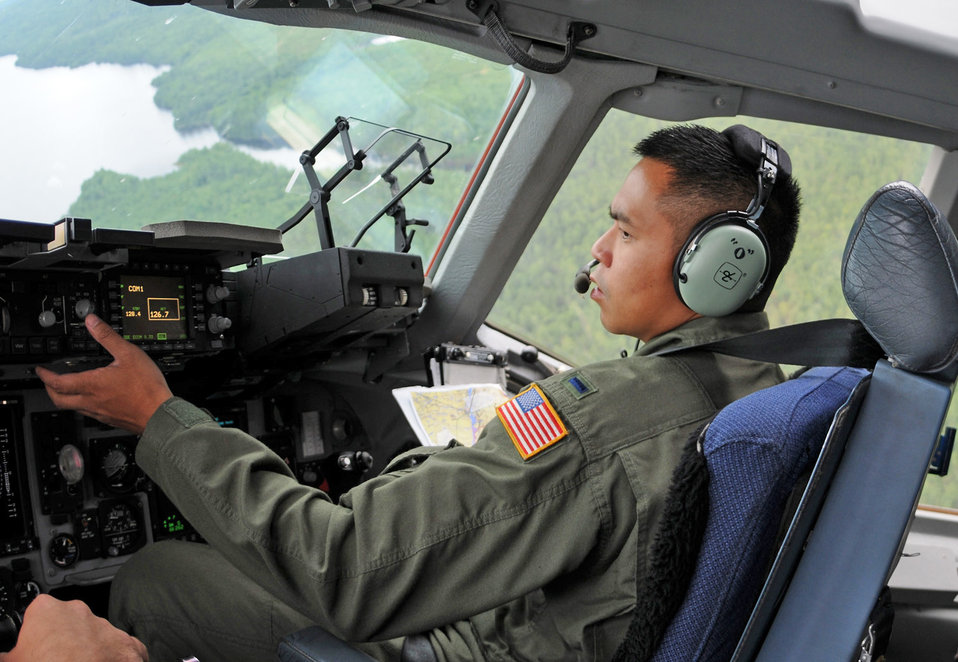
Dover reservists work to form Canadian sister squadron program

First Lt. Onef Reyes, a C-17 Globemaster III pilot with the Air Force Reserve Command's 512th Airlift Wing at Dover Air Force Base, Del., flies a training mission during a visit to 8 Wing at Canadian Forces Base Trenton, Ontario. Ten reservists from Dover flew to the Canadian base to spend three days with Royal Canadian Air Force members to forge a partnership and identify future training opportunities for flying, aerial port operations, airlift control and maintenance procedures.